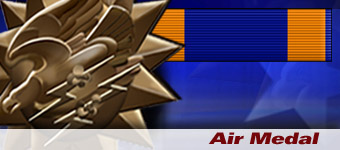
Air Medal spotlight